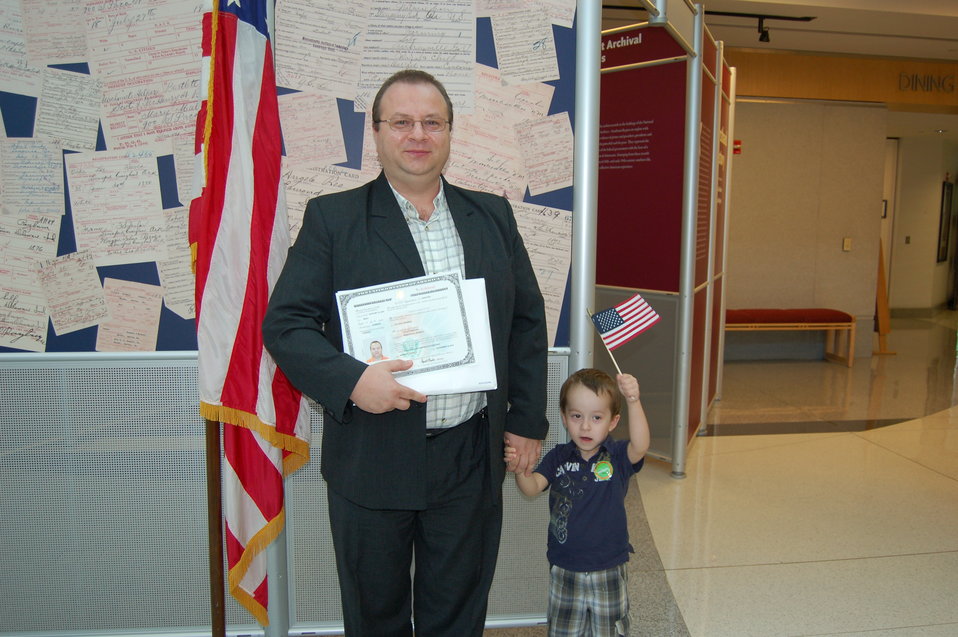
New Citizens